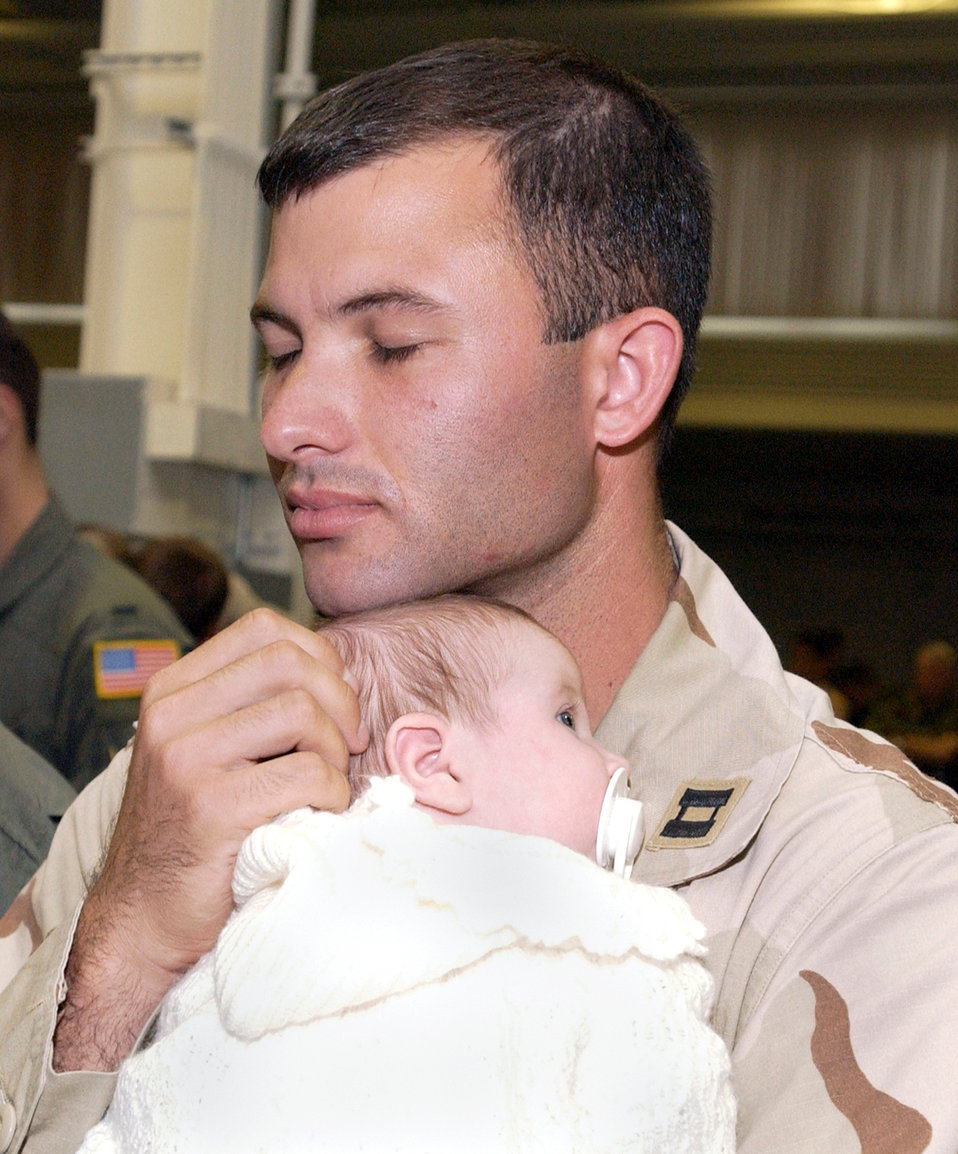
An embrace

TRAVIS AIR FORCE BASE, Calif. (AFPN) - Capt. Aaron Sasson holds his 5-week-old goddaughter, Katie Hayden, for the first time after returning from a deployment supporting Operation Iraqi Freedom. Sasson is assigned to the 660th Aircraft Maintenance Squadron here. More than 100 Travis airmen returned home April 29.